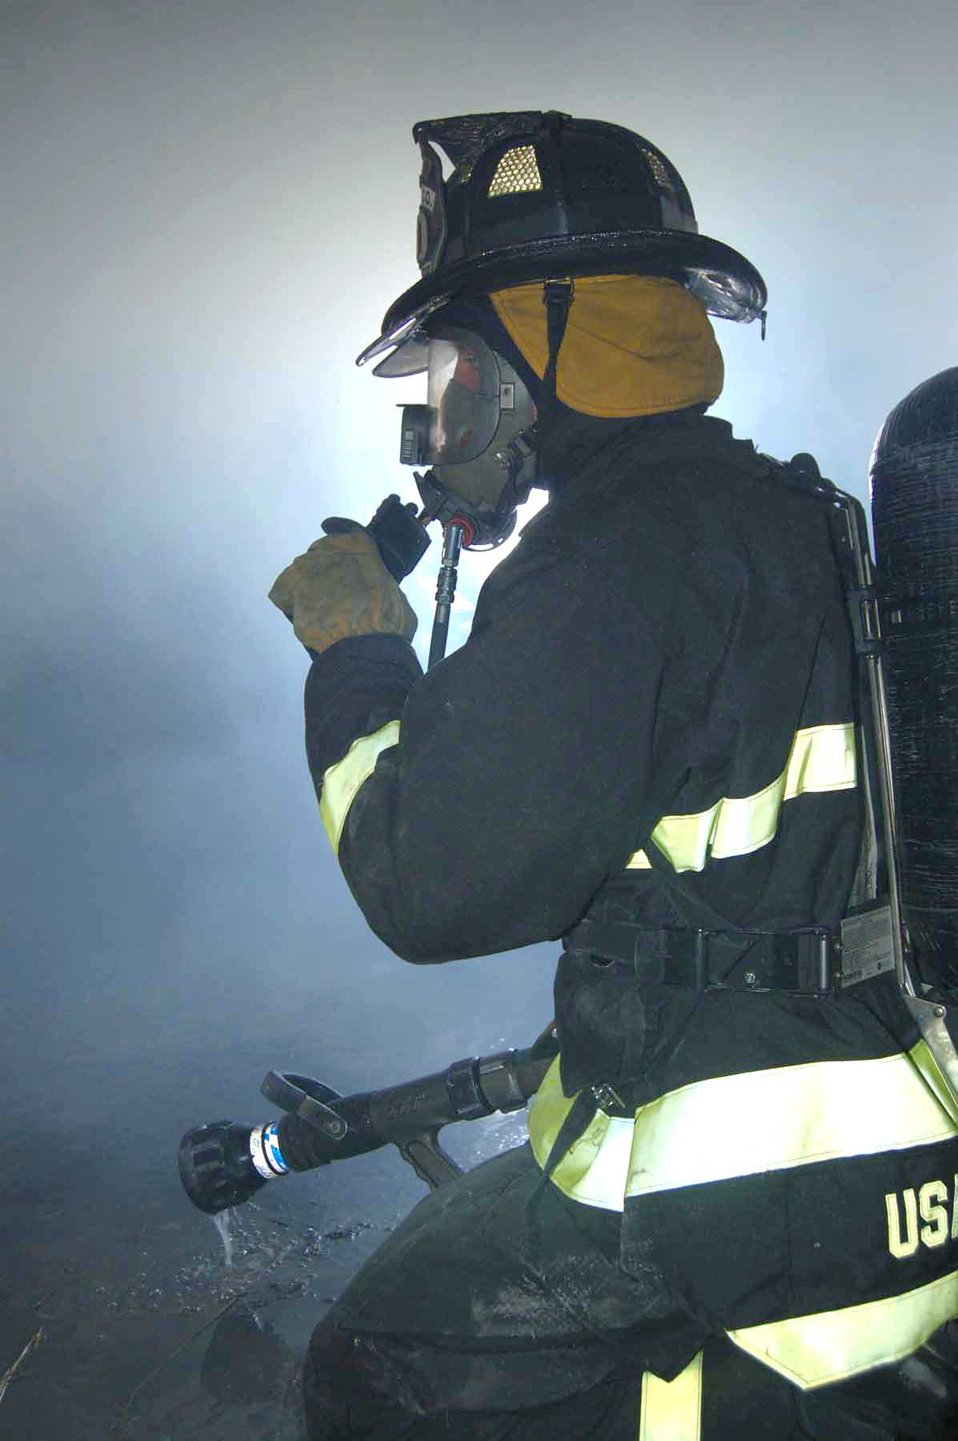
Live-fire training

Staff Sgt. Jack Snyder communicates to safety observers during a live-fire training exercise at Spangdahlem Air Base, Germany, Sept. 10. Sergeant Snyder is a firefighter assigned to the 52nd Civil Engineer Squadron.